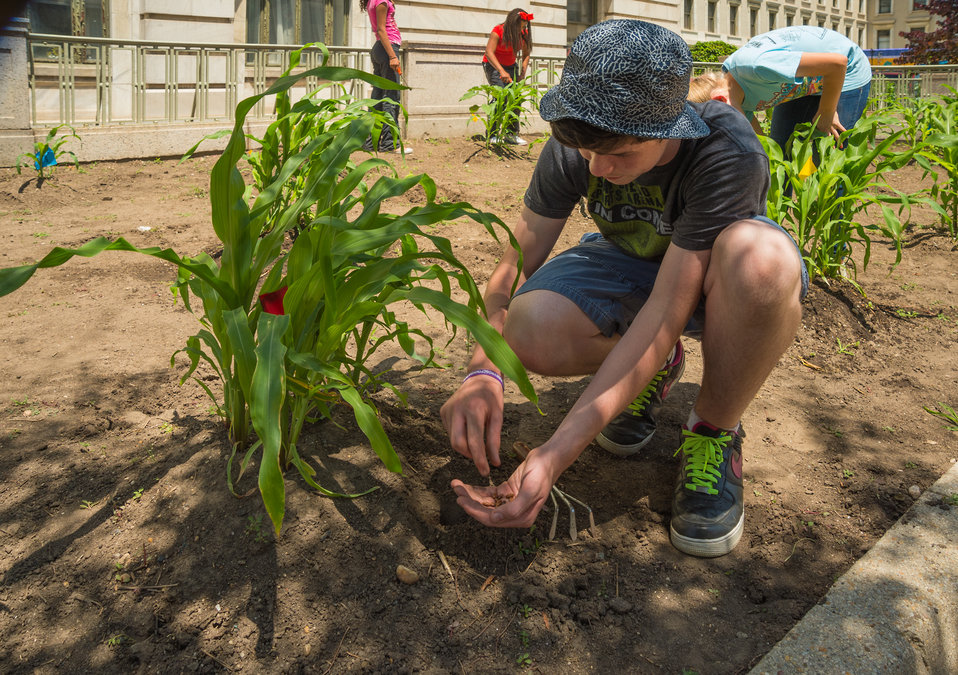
Rory Hagerty, a seventh grade student from Alice Deal Middle School plants beans in the Three Sisters Garden at the United States Department of Agriculture (USDA's) People’s Garden on Wed. Jun. 4, 2014 in Washington, DC. The garden is named the Three Sisters Garden for the three crops grown in the garden, corn, beans and squash. Corn the first sister is the tallest representing strength, beans the second sister climb and need the support of the first sister and provide nitrogen for the crops and squash the third sister protect others from sun and animals. The USDA’s Faith Based and Neighborhood Partnerships office sponsored the event.